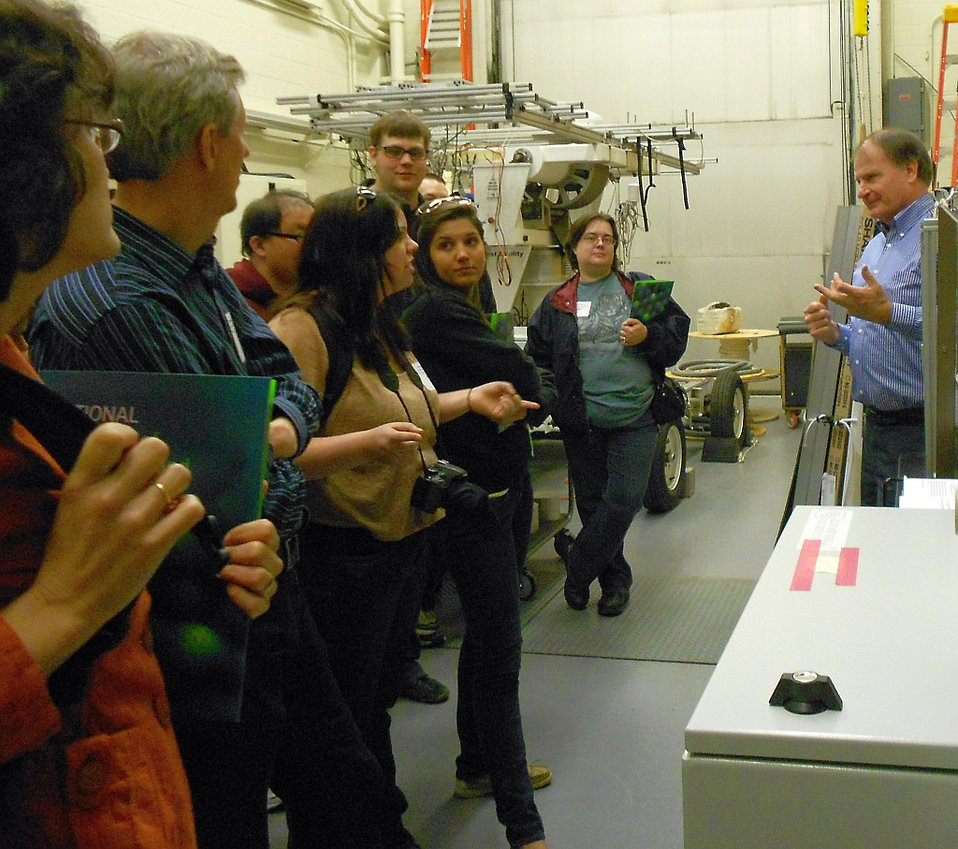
Rochester Community and Technical College Tour

Dr. Hunter Fanny (right), Chief of the Energy and Environment Division at NIST’s Engineering Laboratory describes various approaches and measurement research that could accelerate the widespread adoption of solar photovoltaics with students and faculty from Rochester Community and Technical College in Rochester, MN. As solar energy becomes less expensive , the integration of innovations in solar technology into new construction makes increasing economic and environmental sense.